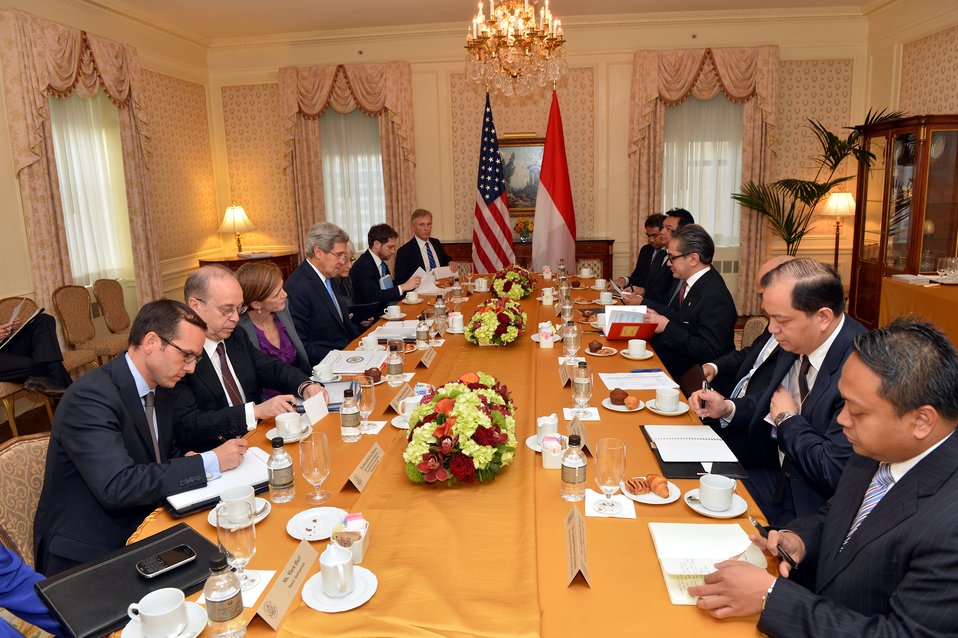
Secretary Kerry Meets With Indonesian Foreign Minister R.M. Marty Natalegawa

U.S. Secretary of State John Kerry meets with Indonesian Foreign Minister R.M. Marty Natalegawa in New York City on September 27, 2013.